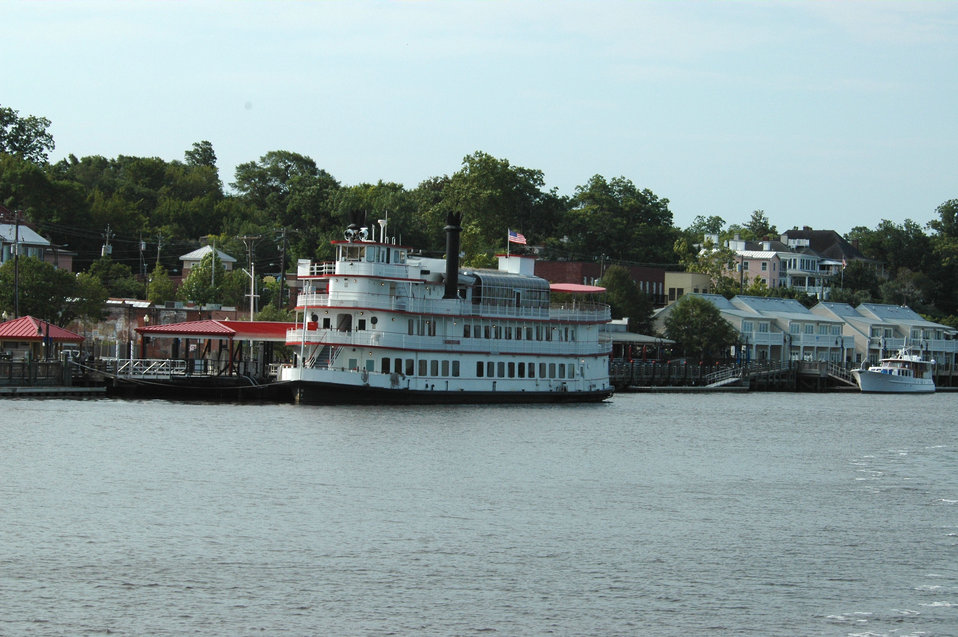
'Steamboat' HENRIETTA III tied up along the Wilmington waterfront.